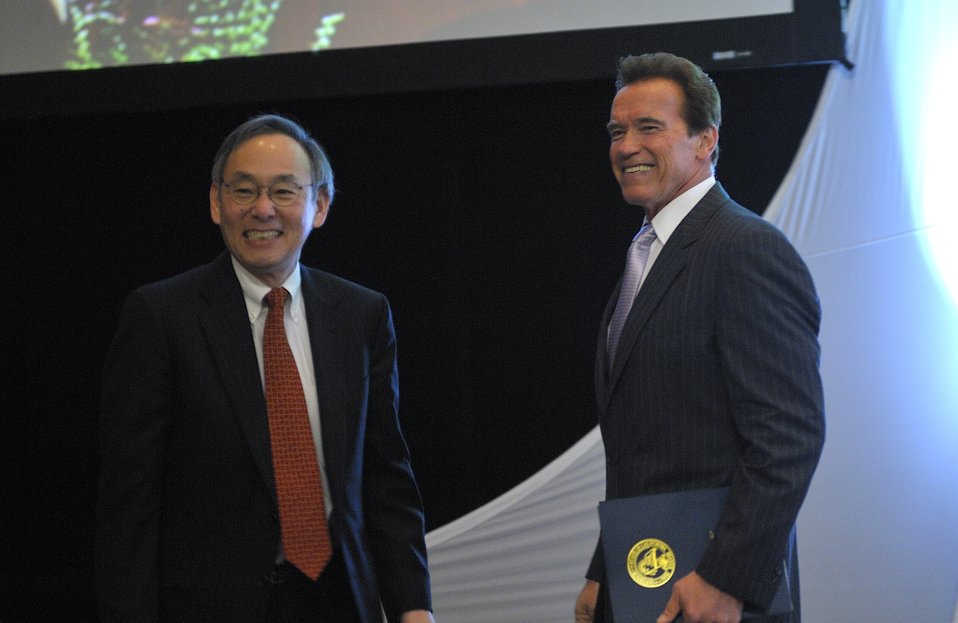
ARPA-E Energy Innovation Summit 2011, 20 of 83

Steven Chu, Secretary, United States Department of Energy and Arnold Schwarzenegger, Former Governor of California.